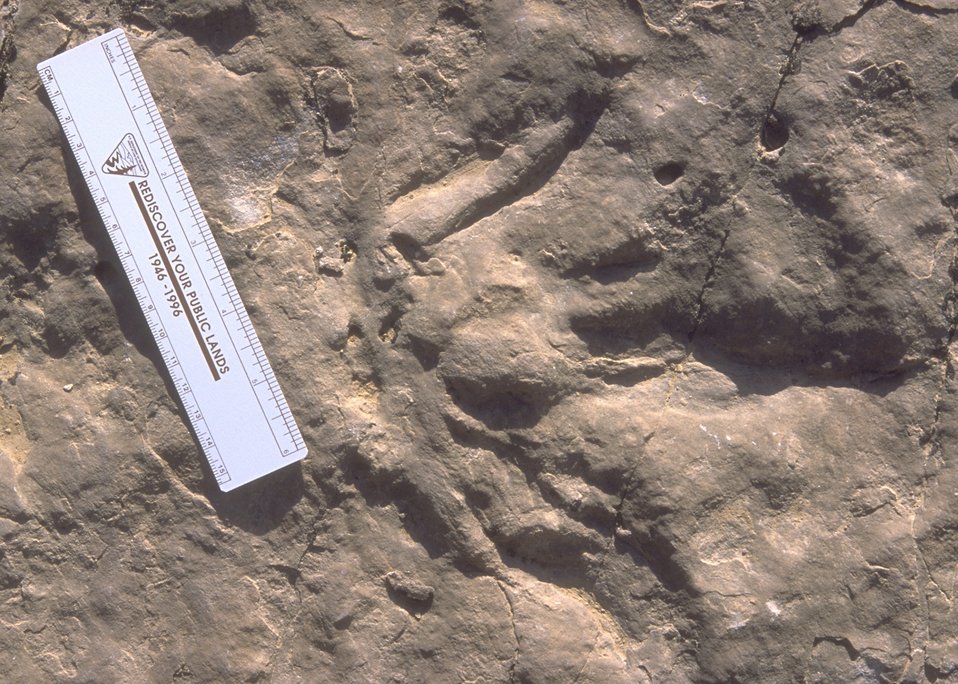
Detail of dinosaur tracks at the Red Gulch Dinosaur Tracksite, Worland Field Office.